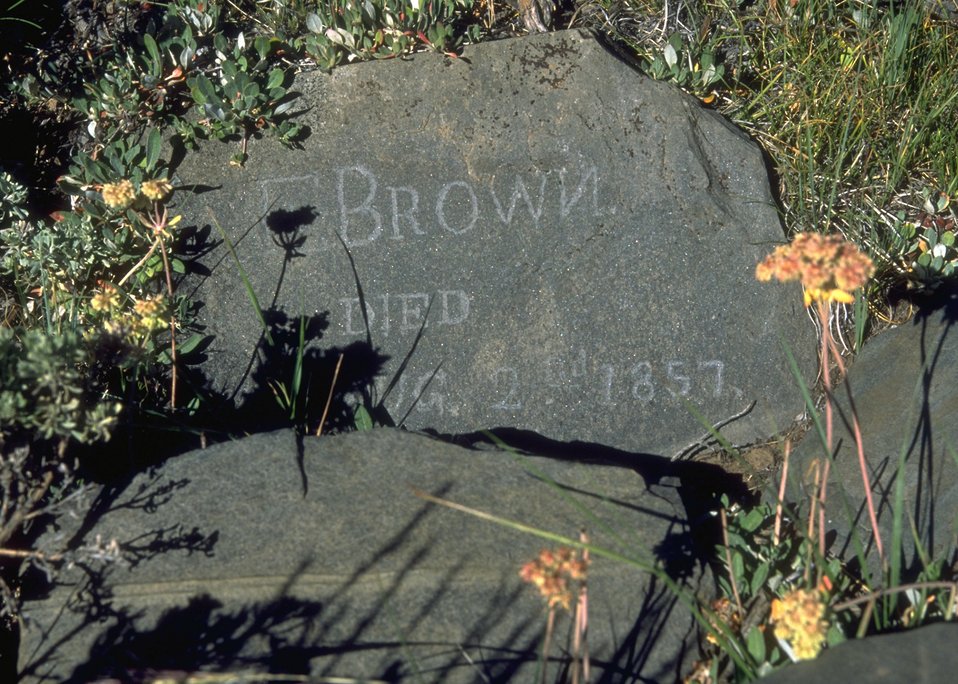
Grave site (1857) along the Oregon Trail, Lander Field Office.